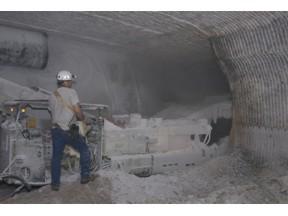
WIPP Miner

The Waste Isolation Pilot Plant uses a continuous miner to carve disposal rooms out of the Permian Salt Formation, nearly a half mile below the surface.